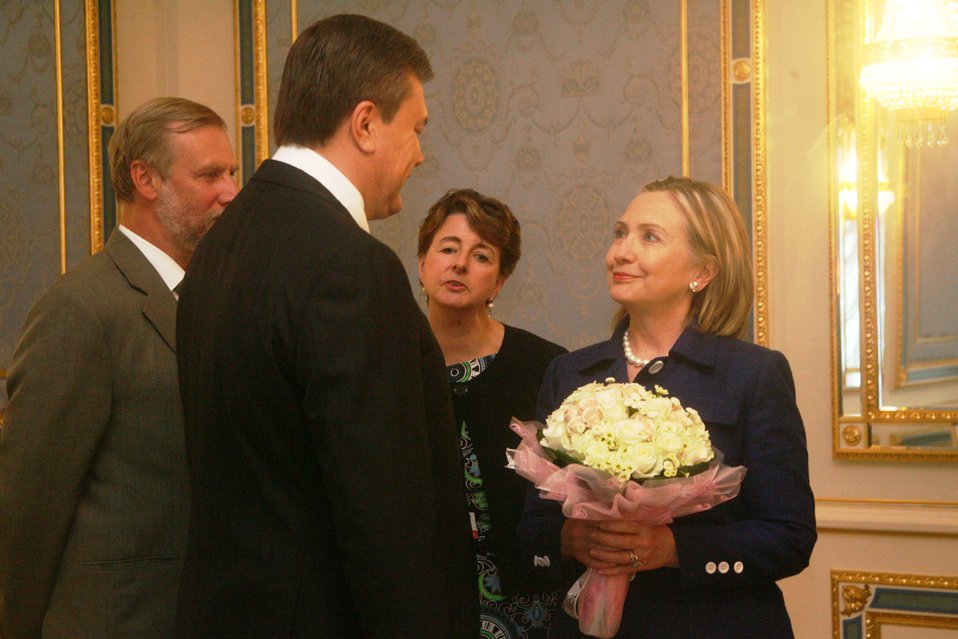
Secretary Clinton Is Greeted By Ukrainian President Yanukovych

U.S. Secretary of State Hillary Rodham Clinton is greeted by Ukrainian President Viktor Yanukovych in Kyiv, Ukraine, on July 2, 2010.